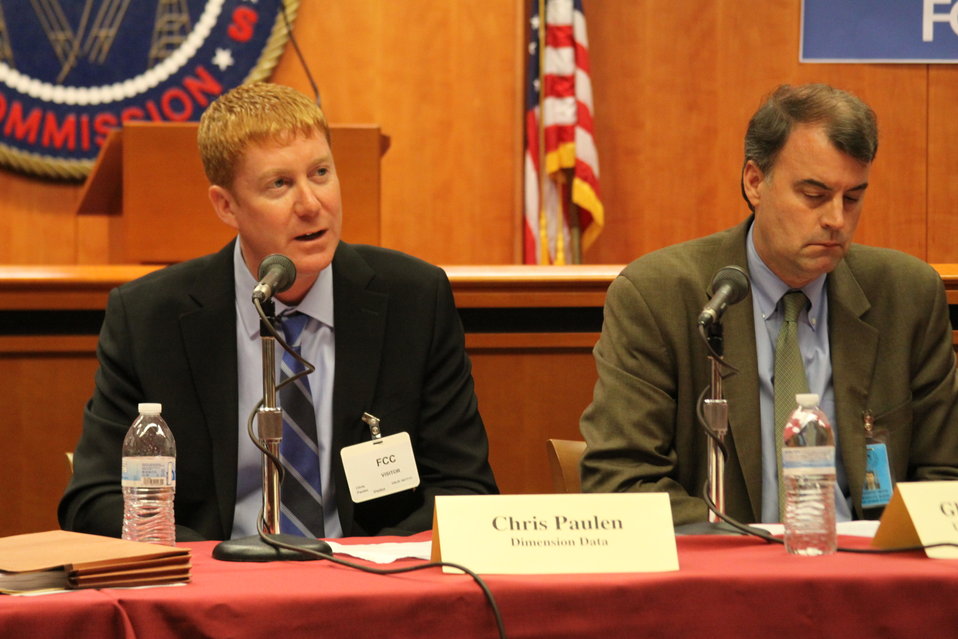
April 17, 2013 Bill Shock and Cramming Workshop